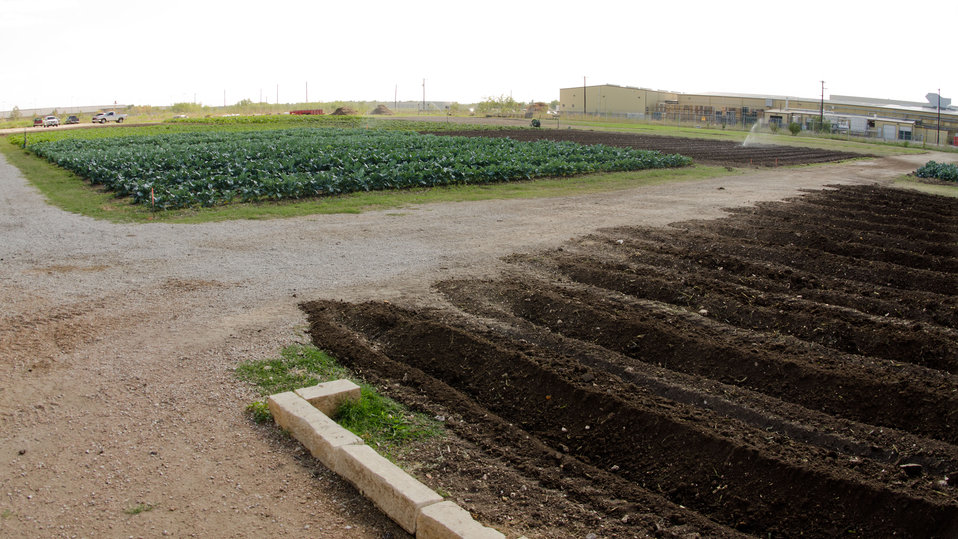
The Spurs Community Garden is part of the San Antonio Food Bank’s Nutrition Education Program and provides garden fresh organic produce to one of it’s sponsors, the United States Department of Agriculture (USDA) Supplemental Nutrition Assistance Program - Education Program (SNAP-ED). This produce is used for presentations about nutrition education, economical ways to increase fruit and vegetable consumption and physical exercise on it’s walking trail to get fit in San Antonio, TX, on Monday, October 31, 2011. The 5.5-acre garden has a teaching/demonstration garden, large –production gardens, and bee hives. In its first year of operation the garden produced 2,640 pounds of produce and attracted 602 volunteers to support it’s operation and improvement. Most of the produce goes to the more than 500 human service agencies and used in its Community Kitchen to support various meal programs, some of which are supported by the USDA. (For more information go to safoodbank.org/index.php/programs/nutrition/community-garden).
“We couldn’t do what we do without our partnership with USDA’” said President and CEO Eric Cooper. He continues, “We are privileged in partnering (with the USDA) to feed kids, through the summer, with the Summer Food Service Program, and throughout the year, with the Child and Adult Care Feeding Program (CACFP). Then in our approach to feeding seniors, we partner with USDA in the CSFP, and the Senior Farmer’s Market (Nutrition) Program. Through the support of the SNAP-Education Program we are able to educate them during their time of need. With this comprehensive approach we are really able to get the right food, the right amount, at the right time, to needy families throughout our community – which allows us to feed the fifty-eight thousand we do, each week.”
SAFB serves 16 counties in Southwest Texas and states, “Nearly one out of every four children and one out of every five adults in Southwest Texas lives in poverty and has difficulty meeting basic nutritional needs.” According to SAFB, sixty-five percent of the people requesting emergency food have children. “Additionally, the senior citizens and those living on a fixed income generally have limited funds for a consistent grocery budget.” USDA photo by Lance Cheung.

www.fns.usda.gov/fns/
www.fns.usda.gov/snap/
www.fns.usda.gov/snap/nutrition education/default.htm